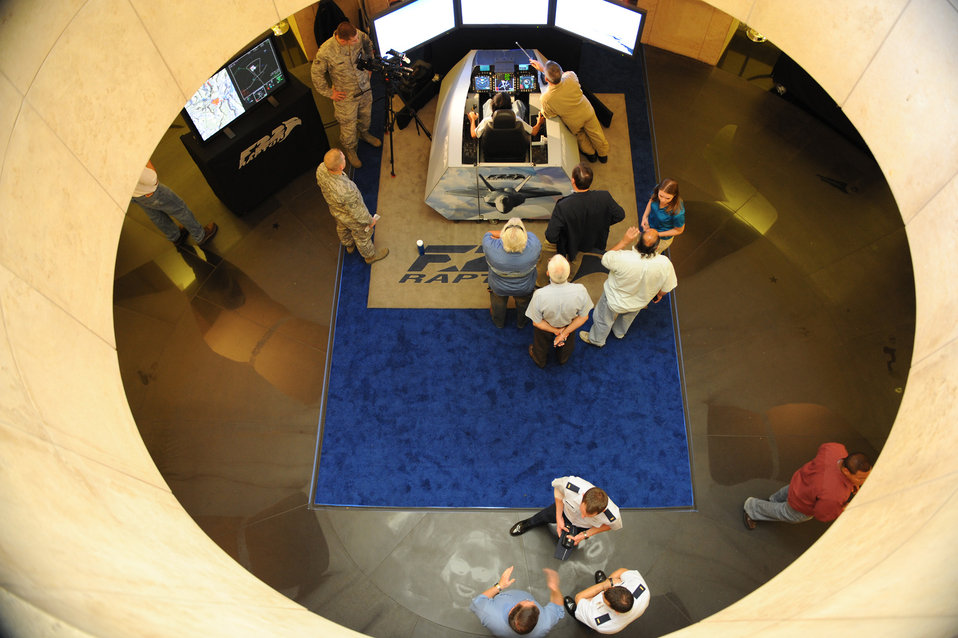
Air Force Expo in Hollywood

Los Angeles residents and tourists watch as one lucky visitor gets a chance to ride in an F-22 Raptor simulator during the Air Force Expo at Hollywood and Highland Boulevard in Los Angeles on Nov. 14. Air Force Week Los Angeles runs until Nov. 21 and has events throughout the area.